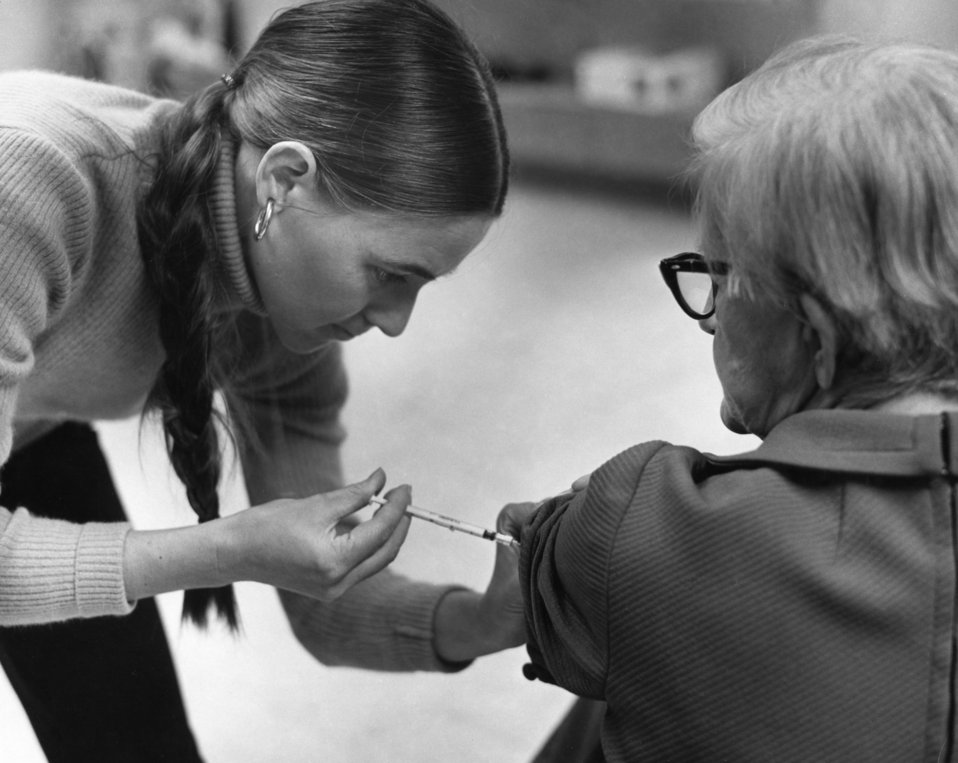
This photograph showed an elderly female as she was receiving a vaccination by a public health clinician during the nationwide swine flu vaccination campaign, which began October 1, 1976.